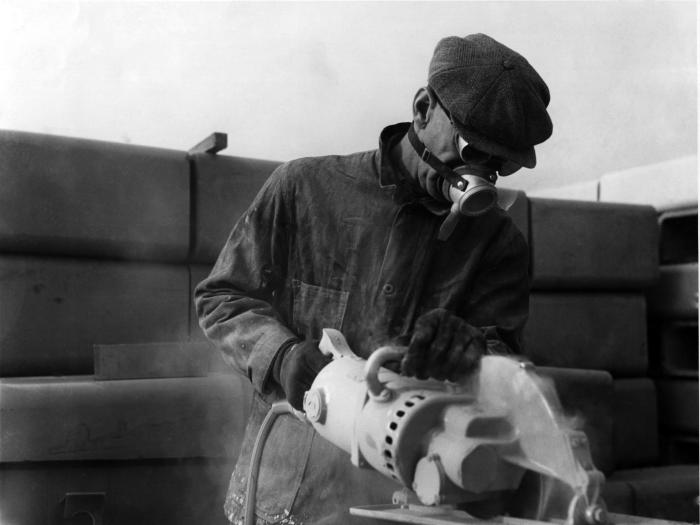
This April 1941 historical photograph was provided by the Center for Disease Control's (CDC), National Institute for Occupational Safety and Health (NIOSH), and it depicted an industrial plant worker as he was cutting tiles, while wearing a filtered respirator and goggles, in order to avoid acute inhalation and ocular injuries, as well as chronic diseases from long-term exposure. In the 1940s and 1950s, the Industrial Hygiene Division (IHD) investigated hazards associated with this and other activities involving workplace health hazards.